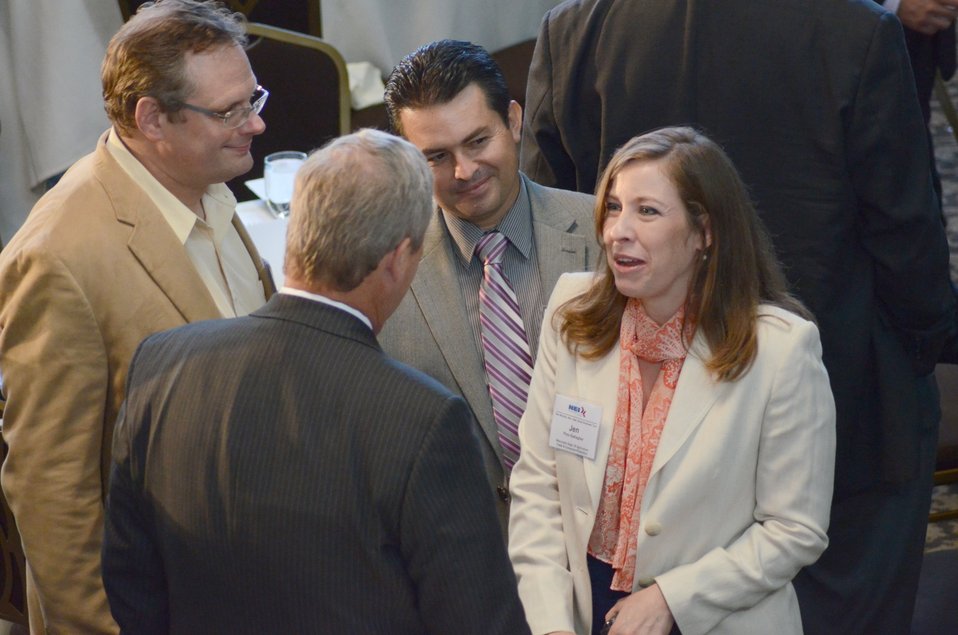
Members of the audience talk to Agriculture Secretary Tom Vilsack speak at the National Export Initiative (NEI) Small Business Tour in Milwaukee, WI, on Wednesday, August 3, 2011. An important goal of the NEI is to provide additional assistance to small and medium-sized businesses, which are major drivers of job creation. The NEI is assisting small and medium-sized businesses win more foreign government contracts, find buyers worldwide, participate in more trade missions and trade shows, receive more export financing, and learn new ways to sell products and services overseas.